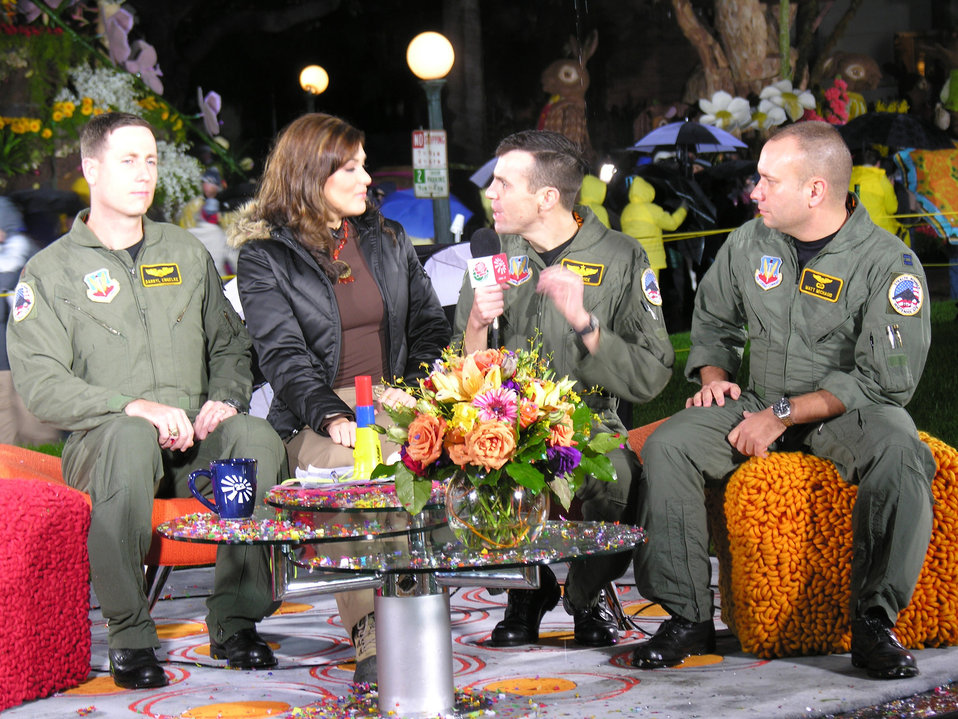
Rose bowl Airmen

PASADENA, Calif. (AFPN) -- B-2 Spirit pilots talk with media members about Air Force participation in the 117th Tournament of Roses Parade Jan. 2. The Air Force participated in several Tournament of Roses events, including Fanfest and the National Bowl Championship Series Rose Bowl game Jan. 4. Opening ceremonies featured a B-1B Lancer flyover and the U.S. Air Force Academy's Wings of Blue parachute team and Cadet Chorale. B-2 pilots are with the 393rd Bomb Squadron at Whiteman Air Force Base, Mo.